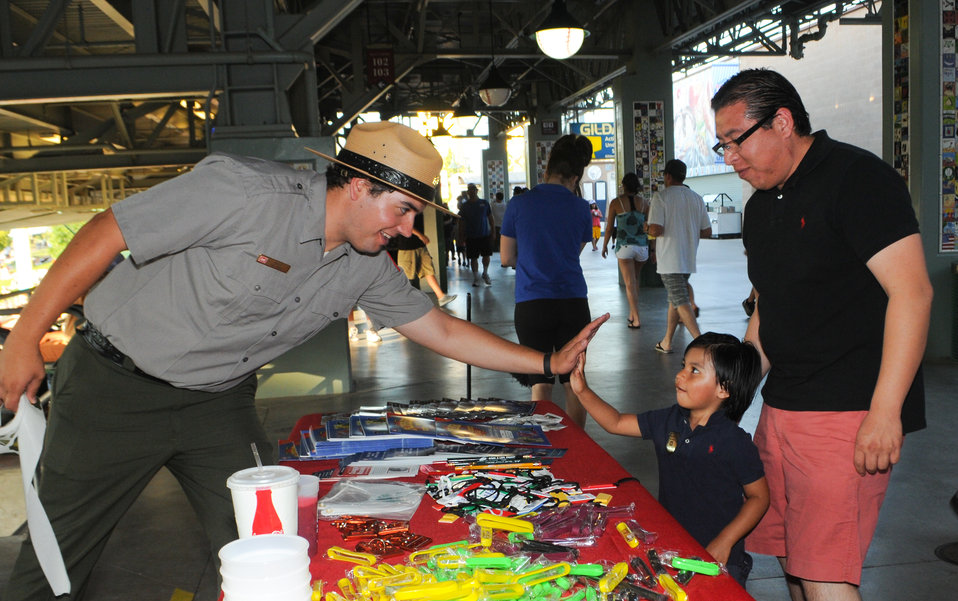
Park ranger Tom Basile high-fives fan

Park ranger Tom Basile (left) from the U.S. Army Corps of Engineers Sacramento District handed out water safety giveaways and high-fives during the Sacramento River Cats’ water safety night May 31, 2012, in West Sacramento, Calif.